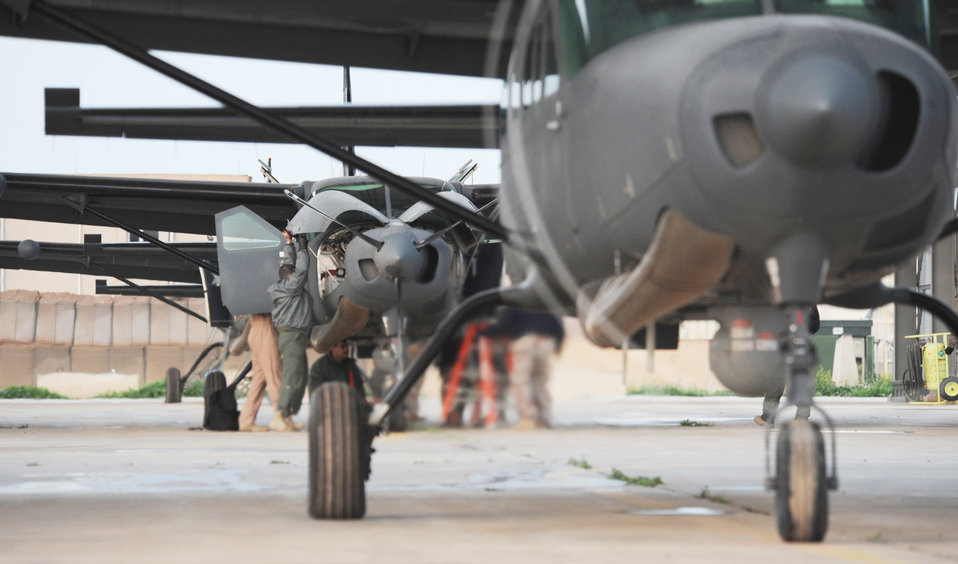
All-Iraqi effort during historic election

Iraqi air force Squadron 3 launches six of their aircraft March 5, 2010, from Kirkuk Regional Air Base, Iraq. This launch was a surge flight operation in support of the national Iraqi elections March 7.